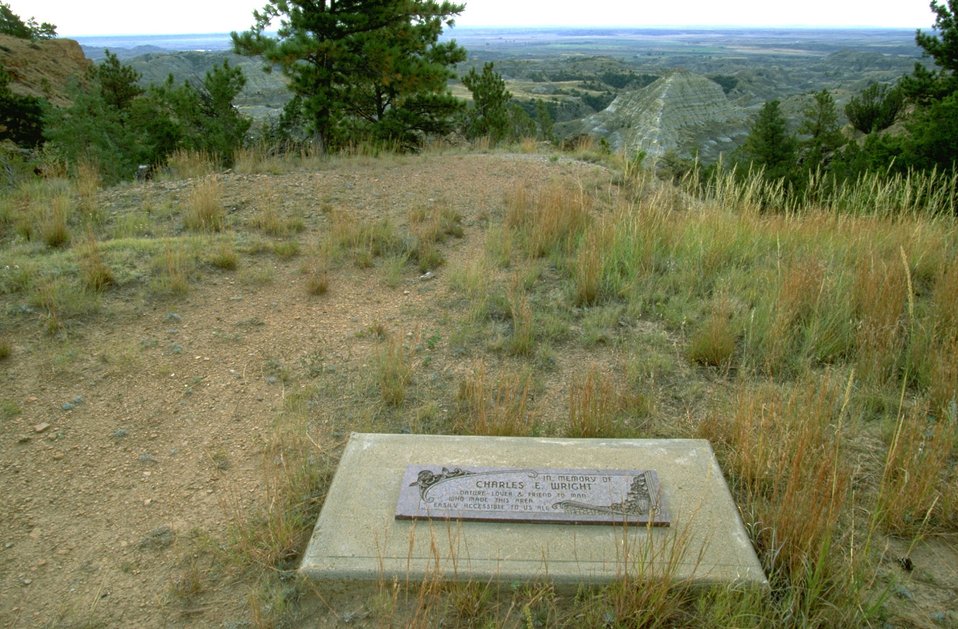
Charles E. Wright Memorial Plaque on a hill in the Terry Badlands